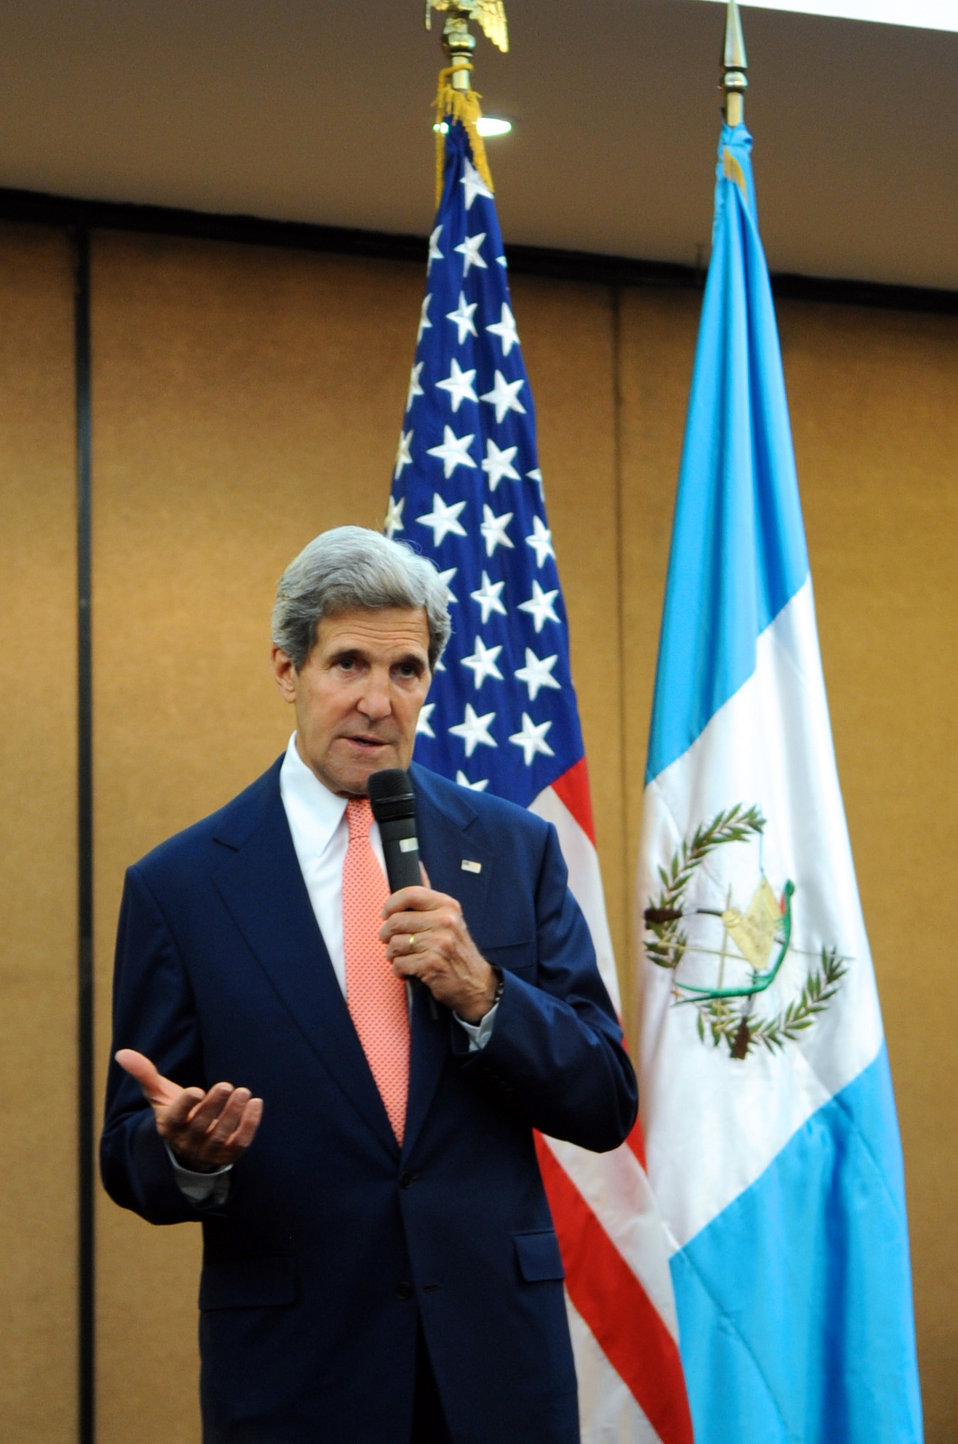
Secretary Kerry Addresses Embassy Guatemala City Staff

U.S. Secretary of State John Kerry addresses the staff of the U.S. Embassy in Guatemala City, Guatemala, before participating in the General Assembly of the Organization of American States Plenary Session in Antigua, Guatemala, on June 5, 2013.